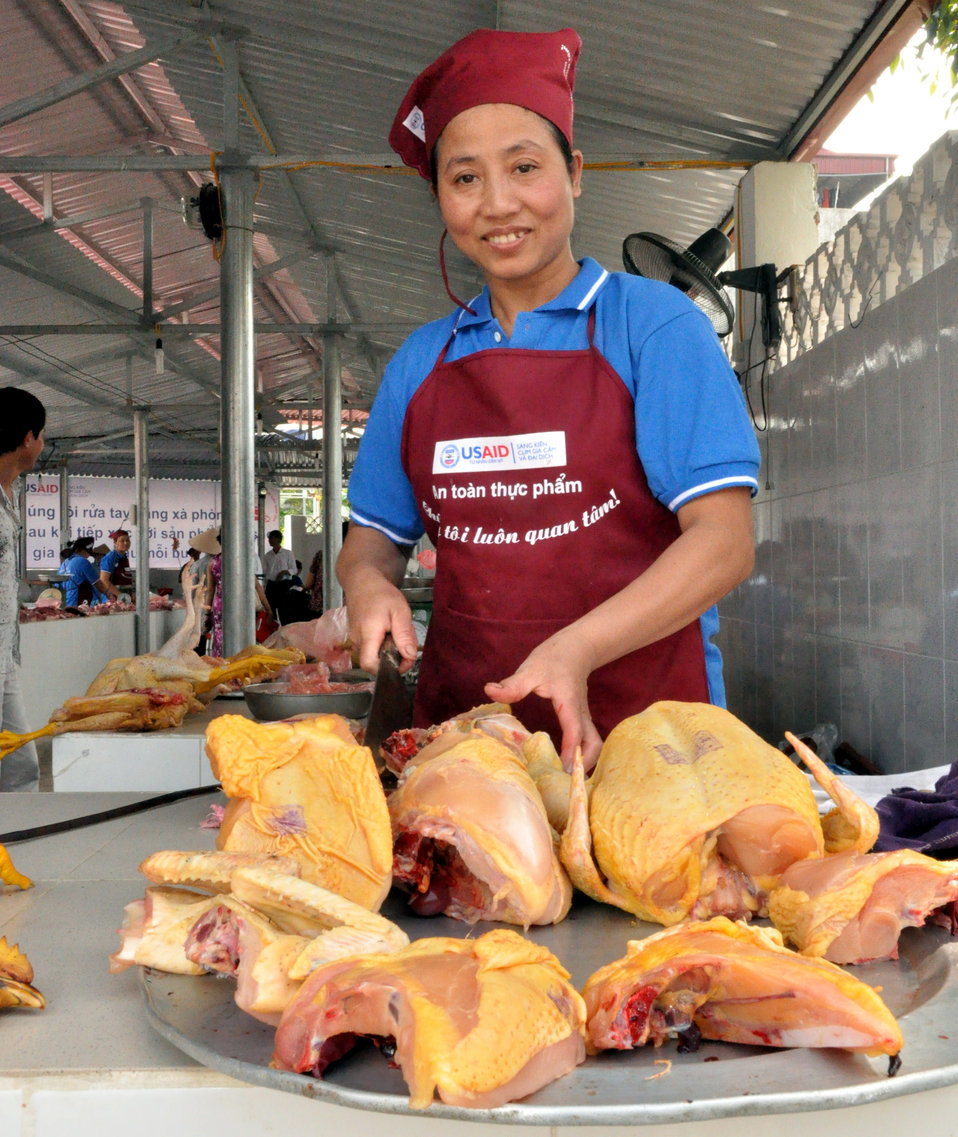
Handover Ceremony Hoa Mac Market Ha Nam

October 26, 2012